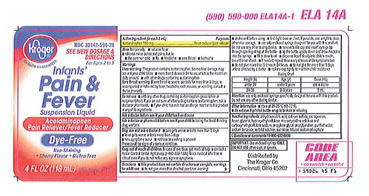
Recalled - Acetaminophen infant suspension liquid

November 1, 2013 – Product Recall – Perrigo Initiates Nationwide Voluntary Product Recall of Acetaminophen Infant Suspension Liquid, 160 Mg/5 Ml, Due to a Potential Defect with the Co-packaged Oral Syringe.